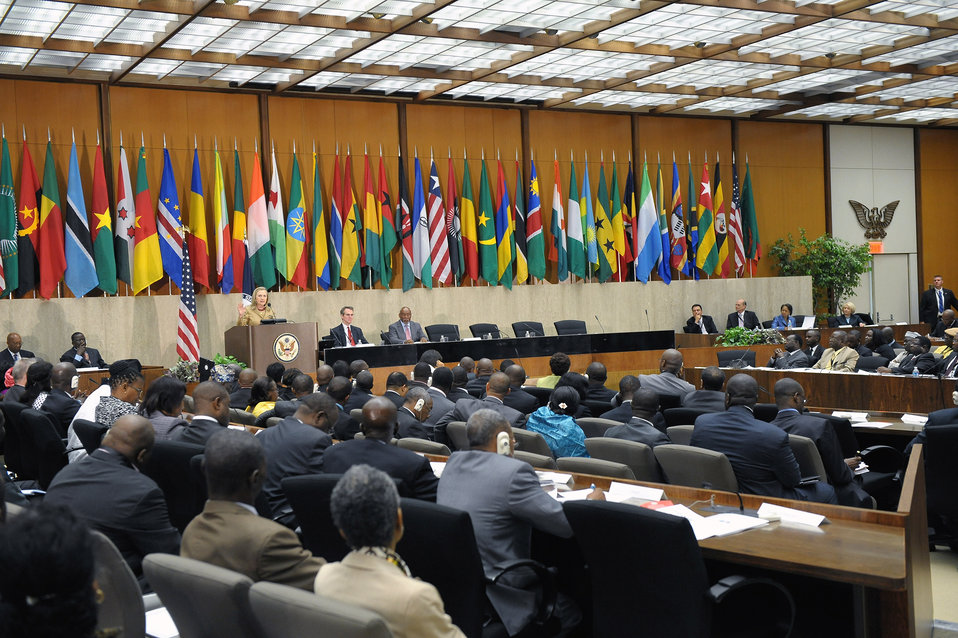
Secretary Clinton Delivers Remarks at the 2012 African Growth and Opportunity Act Forum

U.S. Secretary of State Hillary Rodham Clinton delivers opening remarks at the 2012 African Growth and Opportunity Act (AGOA) Forum to mark Global Economic Statecraft Day at the U.S. Department if State in Washington, D.C. on June 14, 2012.